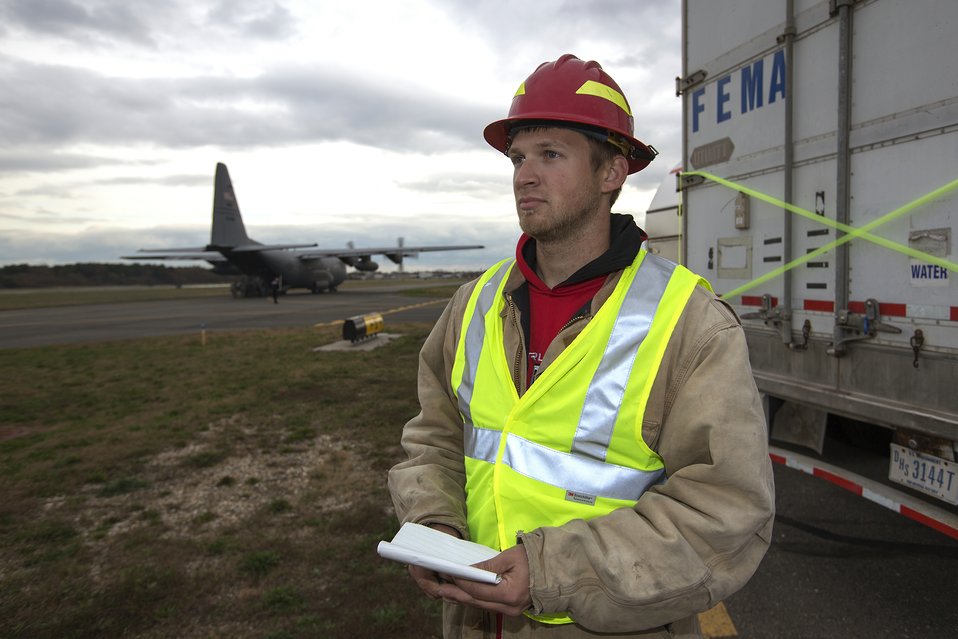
U.S. Forest Service employee Jordon Sanders from Harlan, IA., waits for military aircraft to drop off more supplies in response to Hurricane Sandy at the Republic Airport in Farmingdale, NY, on Thursday, Nov 1, 2012.